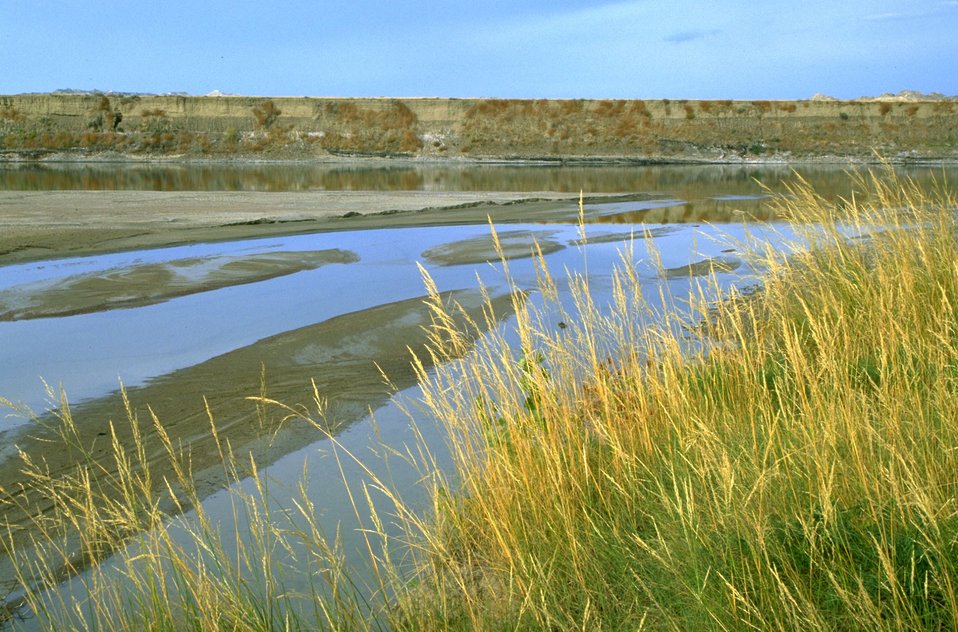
Confluence of Yellowstone and Powder Rivers